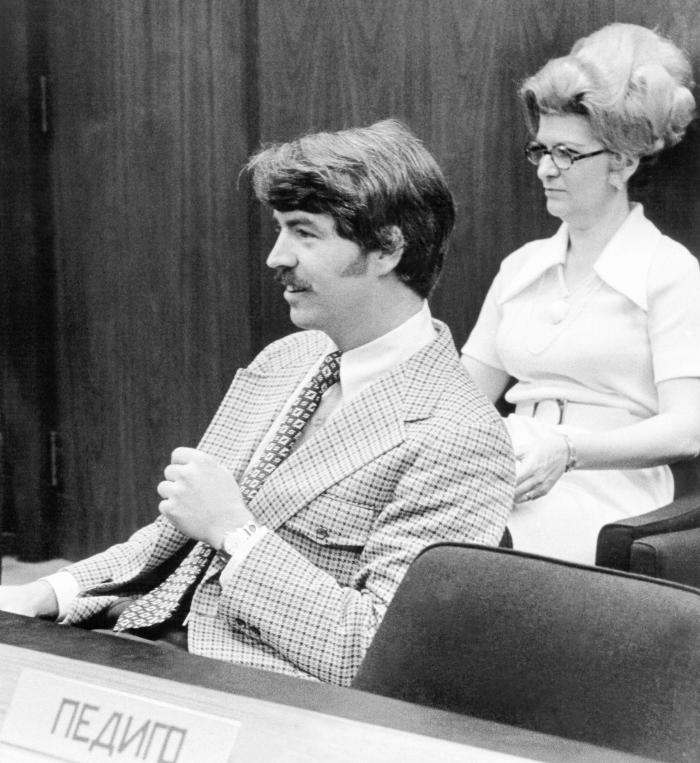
This is a photograph of Philip J. Landrigan, M.D., M.Sc., D.I.H, an Epidemic Intelligence Service (EIS) Officer, 1970 - 1973.